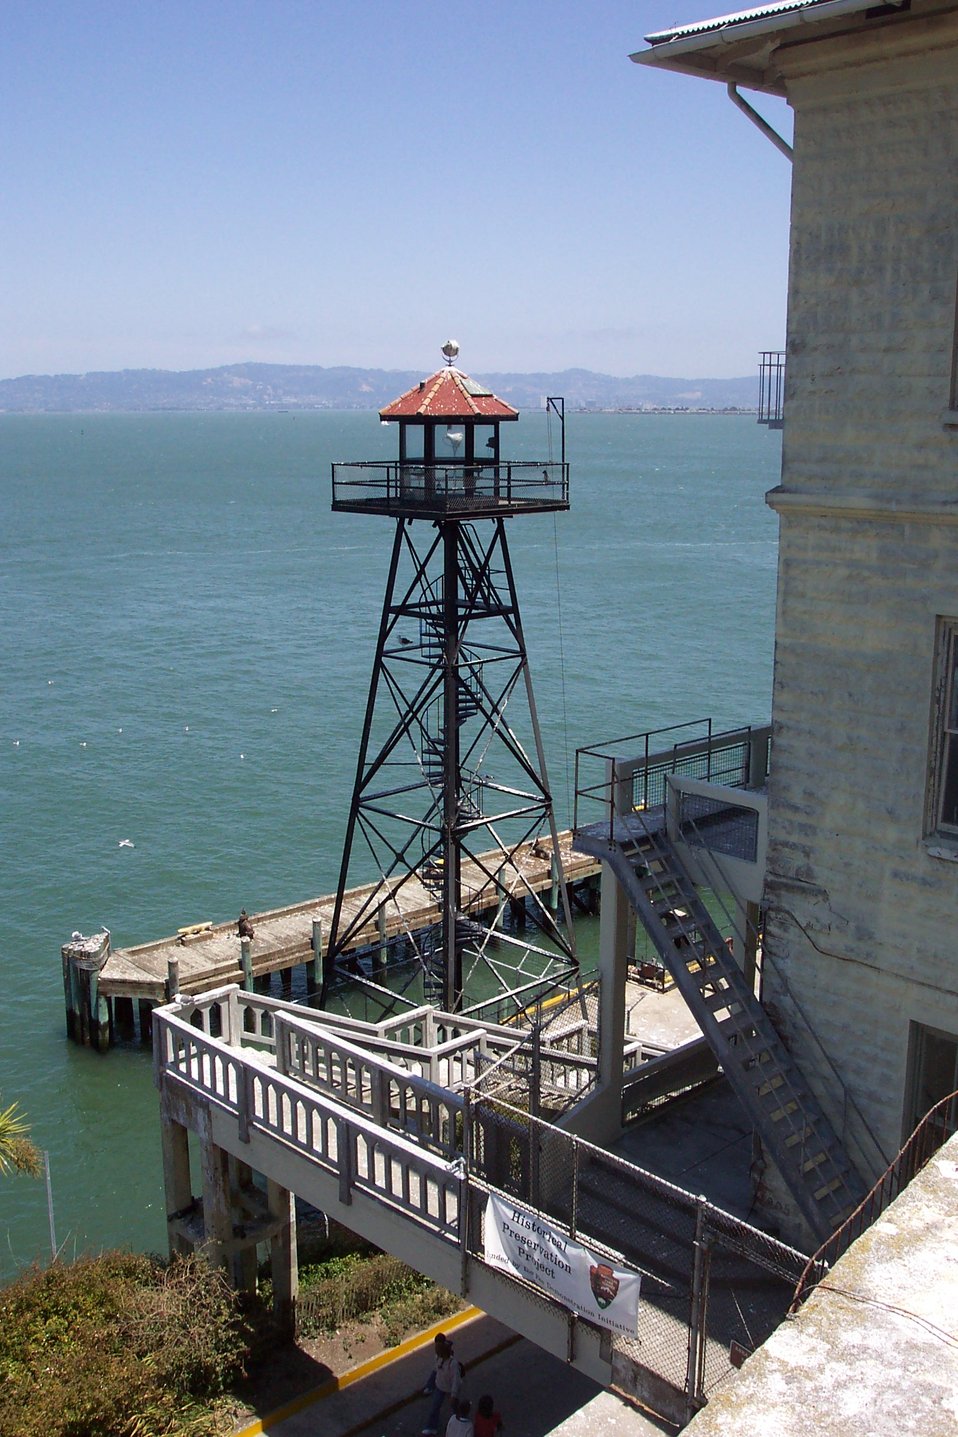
An Alcatraz guard tower overlooking the pier area.